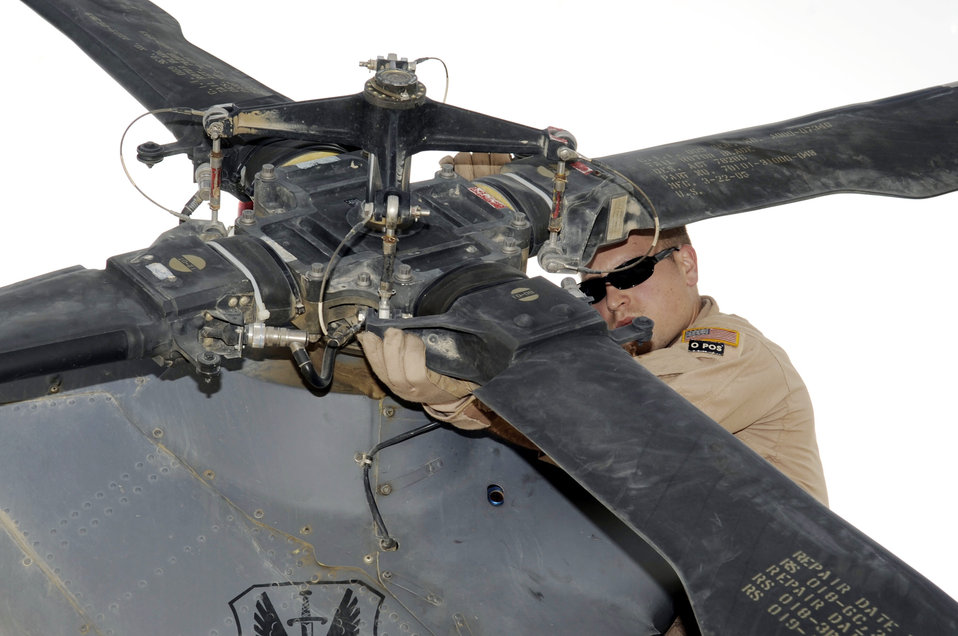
Rescue crews fly into hostile zones to save lives

Tech. Sgt. William Nabakowski conducts a routine preflight check on a HH-60G Pave Hawk helicopter March 5, 2010, at Kandahar Airfield, Afghanistan. Sergeant Nabakowski is a 66th Expeditionary Rescue Squadron aerial gunner from Nellis Air Force Base, Nev.